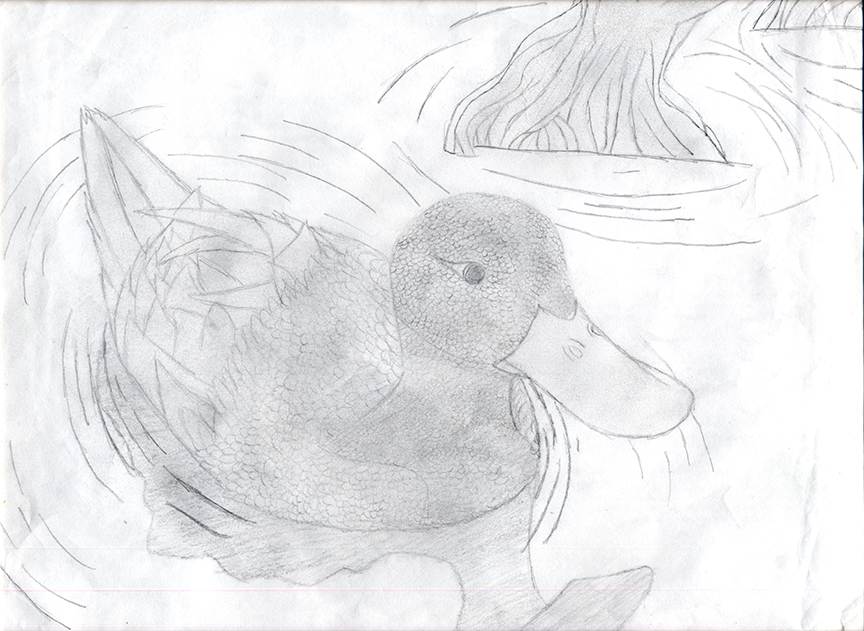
JRDuck2013VQ

2013 Junior Duck Stamp Best of Show-Vieques